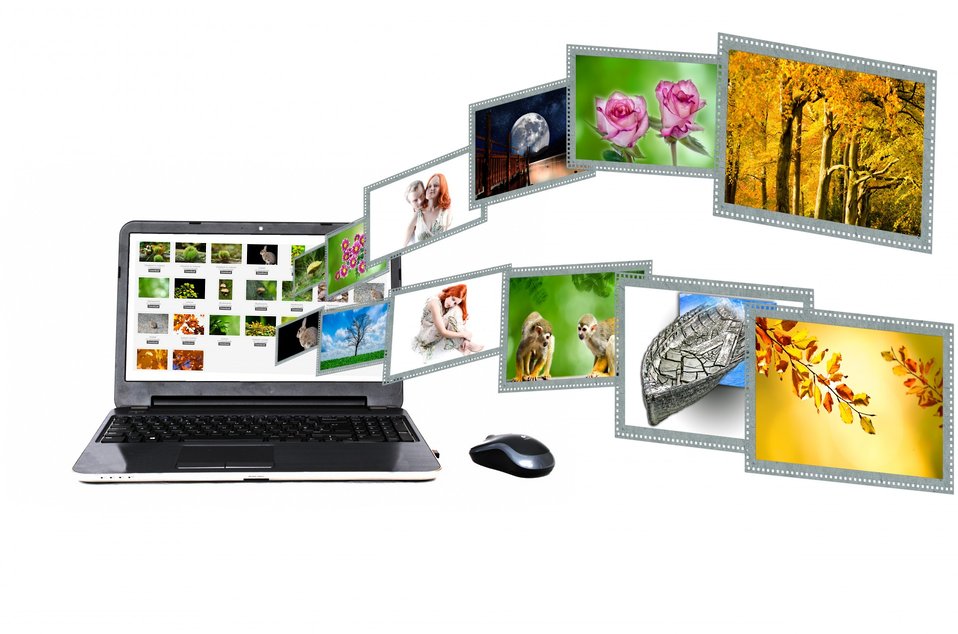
Pictures

Picture sharing in internet.